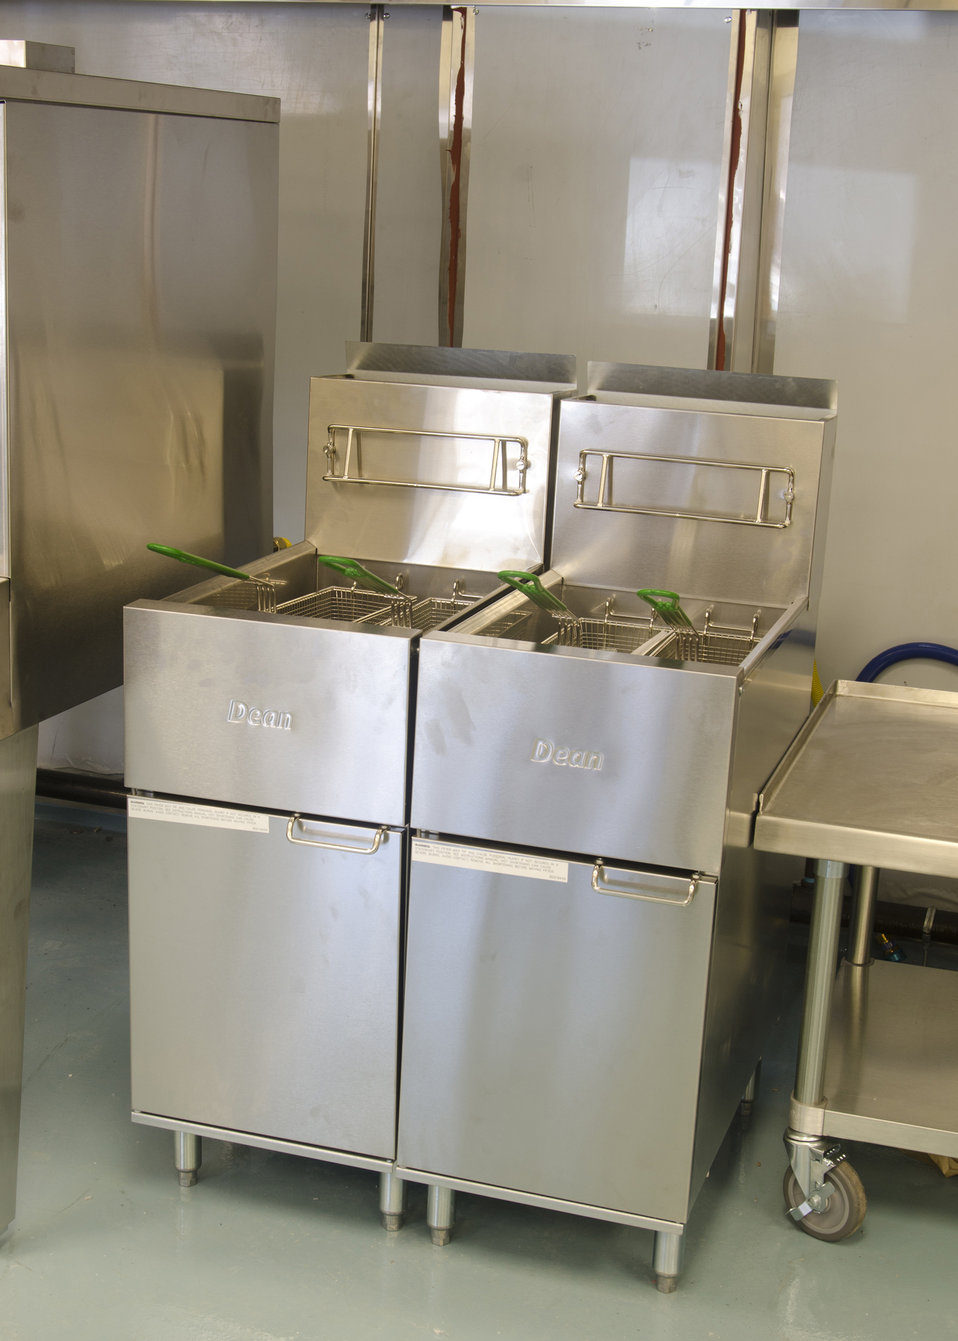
YorKitchen is a shared incubator kitchen that received partial funding through the U. S. Department of Agriculture’s (USDA) Rural Development (RD) Rural Business Enterprise Grant (RBEG) program. This program provides grants for rural projects that finance and facilitate development of small and emerging rural businesses, distance- learning networks, and employment related adult education programs. YorKitchen is a commercially equipped and fully licensed kitchen in which new entrepreneurs can prepare new products without the associated start up costs. This “incubator kitchen” provides full business support to include invoicing, accounting, advertising, outreach, and marketing for entrepreneurs. The YorKitchen is housed in the annex of Central Market in York, PA. This location offers local agricultural producers increased opportunities to develop new value-added products with their produce.